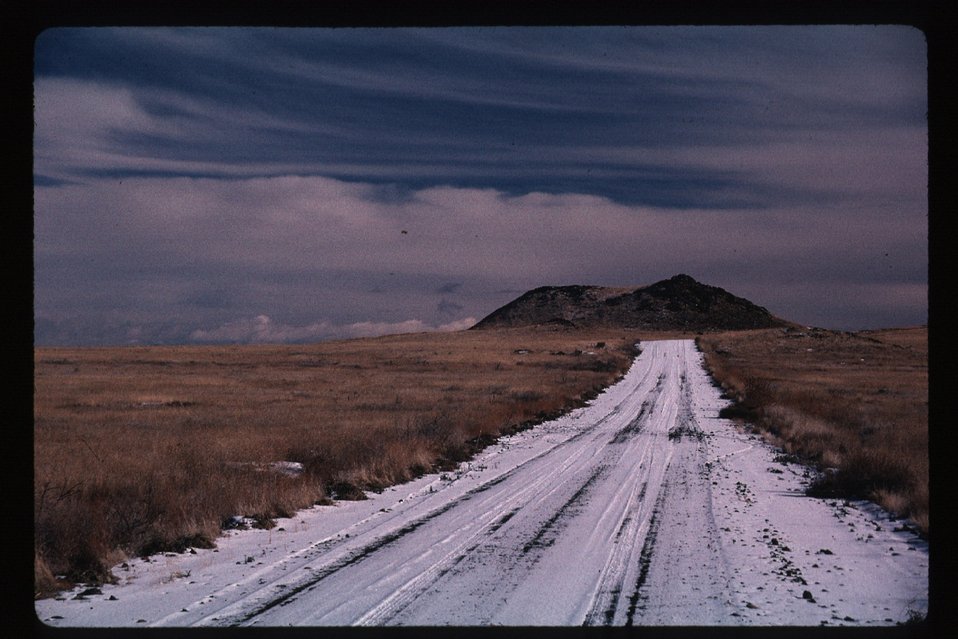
Initial Point Scenic Birds of Prey National Conservation Area BOP Owyhee Field Office LSRD Lower Snake River District